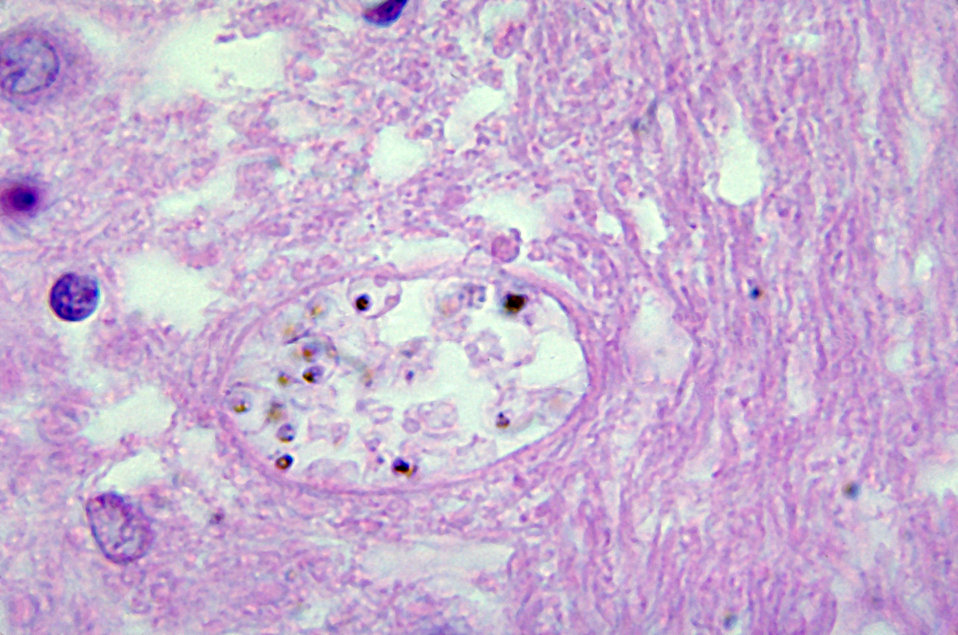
Histopathology of malaria of brain. Mature schizonts. Parasite.